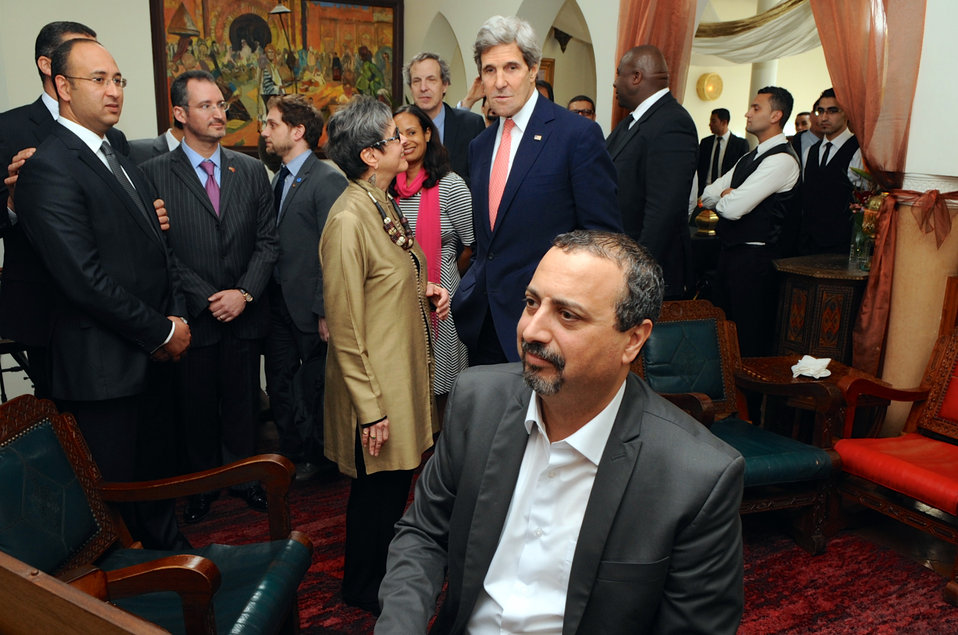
Secretary Kerry Chats With Rick's Cafe Owner While Piano Player Named Sam Plays in Casablanca

U.S. Secretary of State John Kerry chats with proprietor Kathy Kriger - a former State Department Foreign Service Officer - while a piano player named Sam plays during a visit to Rick's American Cafe in Casablanca, Morocco, on April 4, 2014.